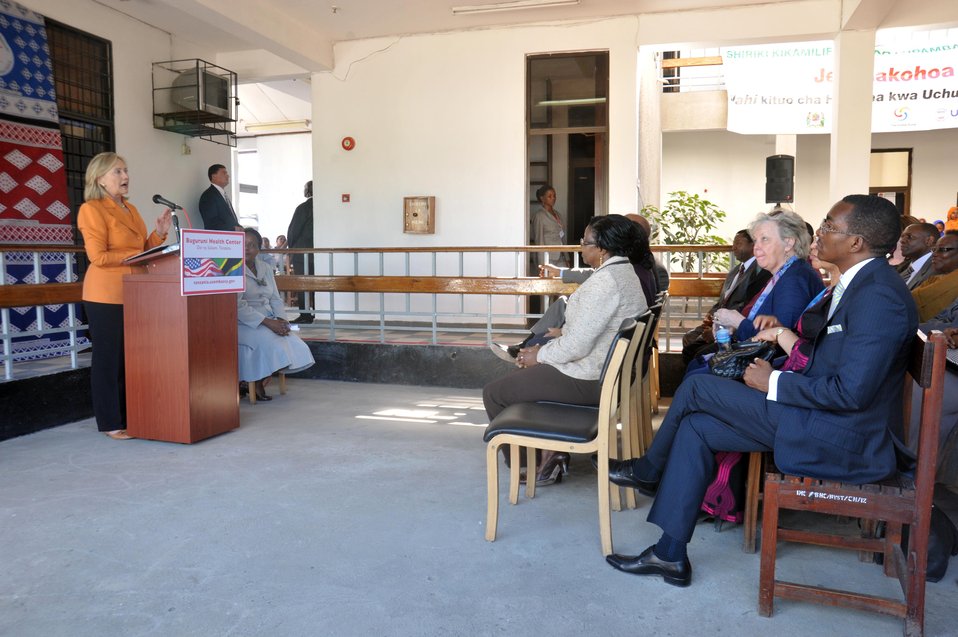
Secretary Clinton Delivers Remarks at the Buguruni Health Center

U.S. Secretary of State Hillary Rodham Clinton delivers remarks at the Buguruni Health Center in Dar es Salaam, Tanzania, on June 12, 2011.